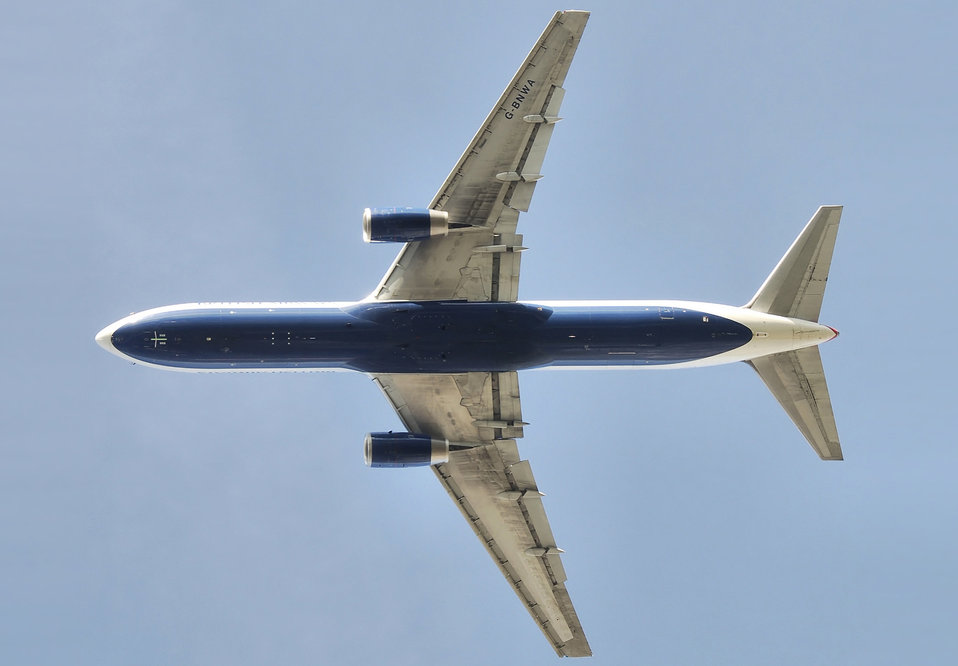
British Airways Boeing 767-300 (G-BNWA) takes off (over my head) from London Heathrow Airport, England. The undercarriages have retracted. Français : Un avion Boeing 767-300 de la British Airways décolle de l'aéroport d'Heathrow, en Angleterre. Son train d'atterrissage est rentré. Türkçe: British Airways'e ait bir Boeing 767-300'ün, kalkışın ardından iniş takımları kapanmış ve flapları kısmen yerini almış hâldeki alttan görünümü